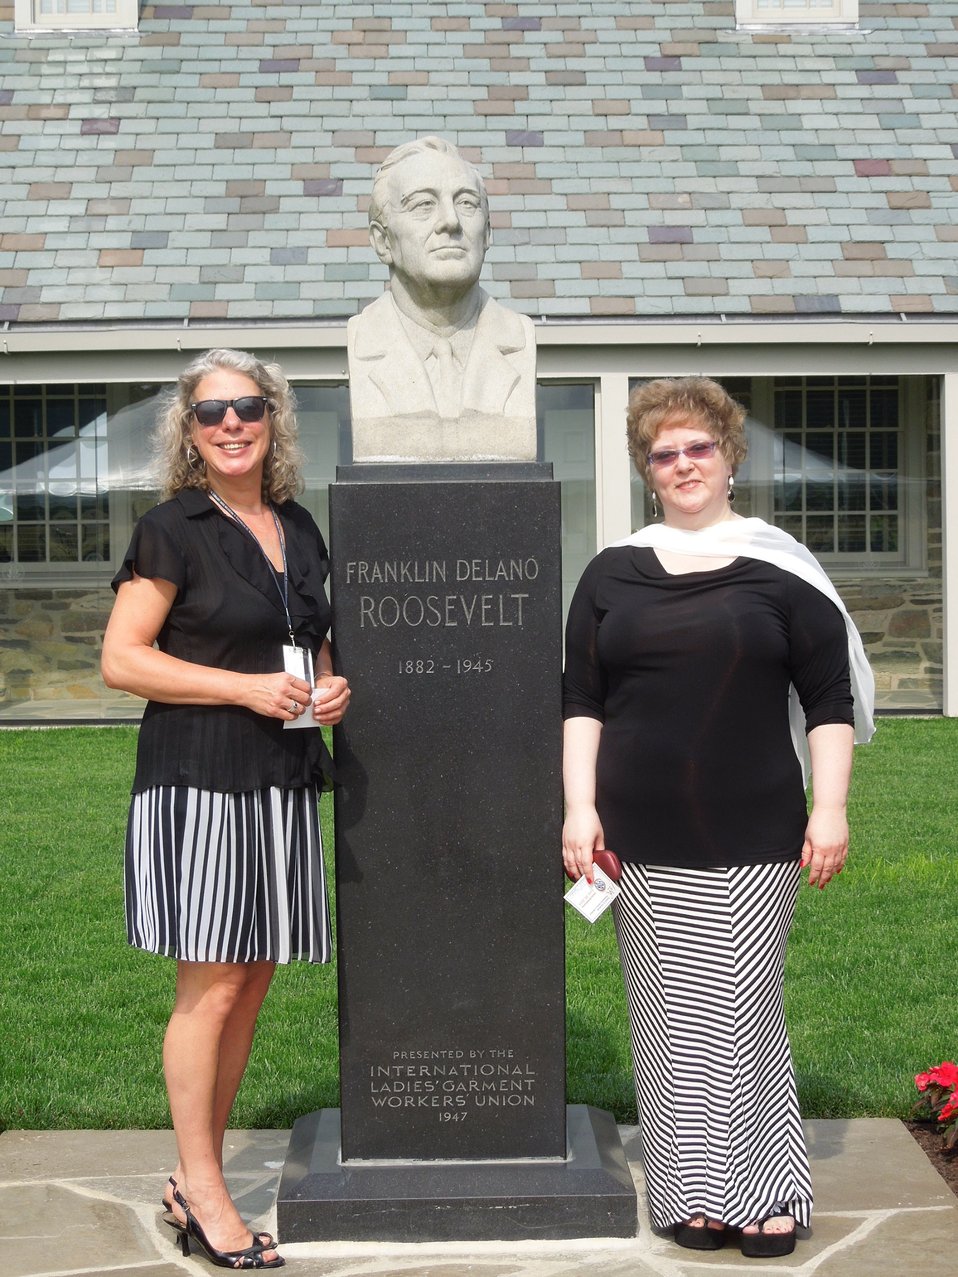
Amy Northup and LeslieAnn Miller stand next to the FDR statue in the courtyard of the FDR Library.; Location: Franklin D. Roosevelt Presidential Library, Hyde Park, New York